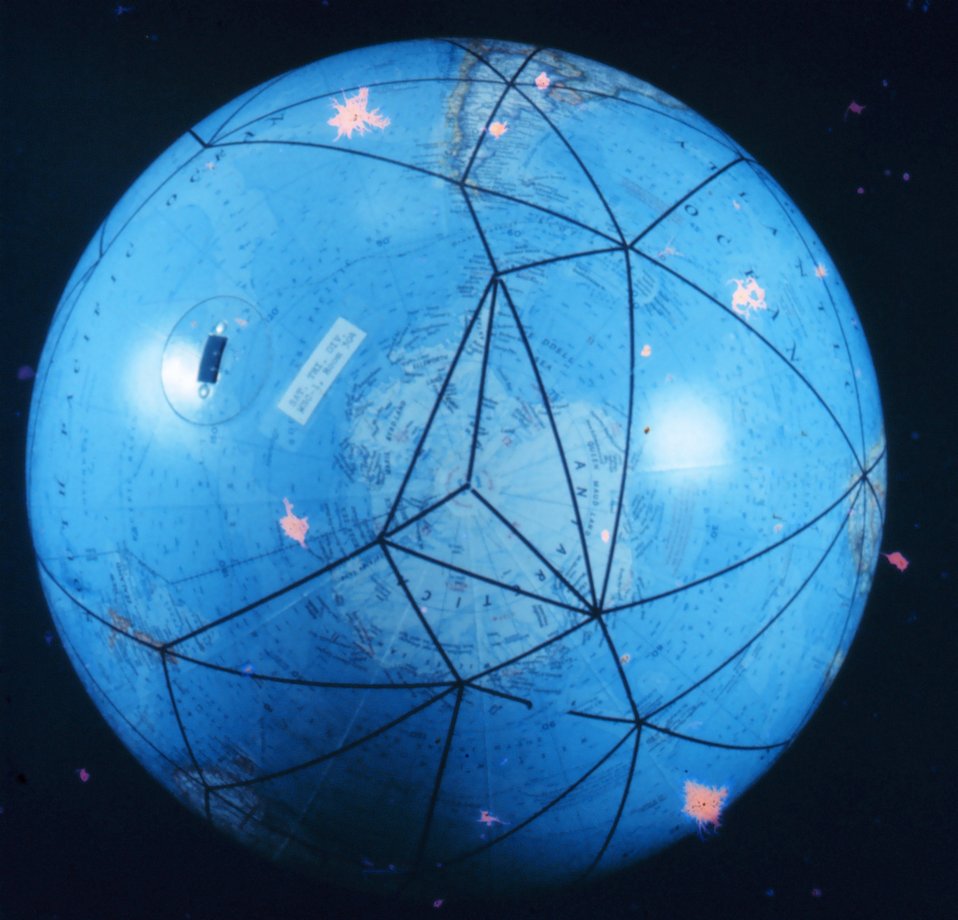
A global model of the satellite triangulation network.